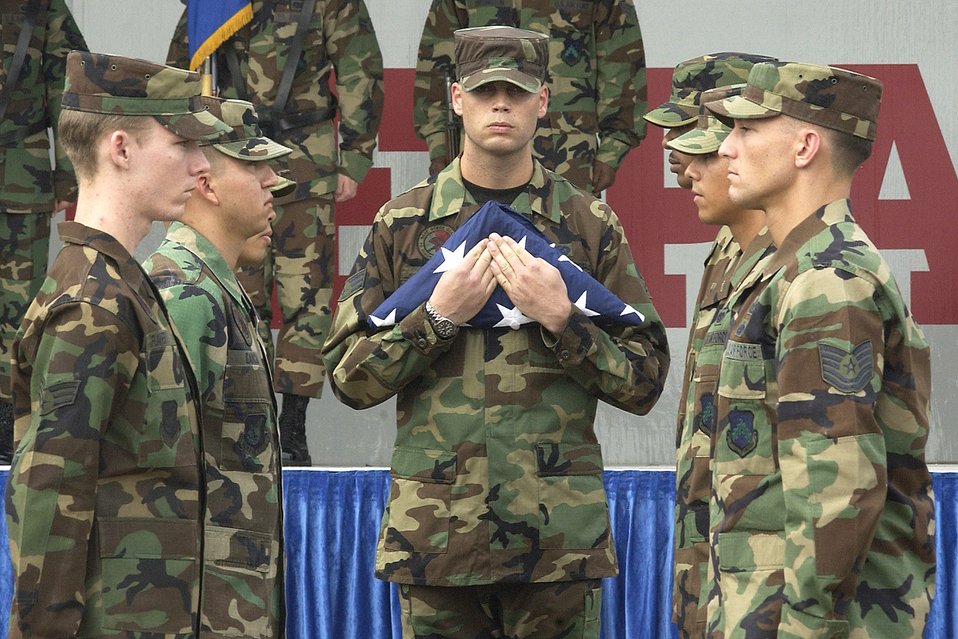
POW/MIA recognition

The American Flag is folded by members of the 8th Fighter Wing during the Prisoner of War and Missing in Action Ceremony Sept. 21 at Kunsan Air Base, South Korea. Sept. 21 is National POW/MIA Recognition Day.